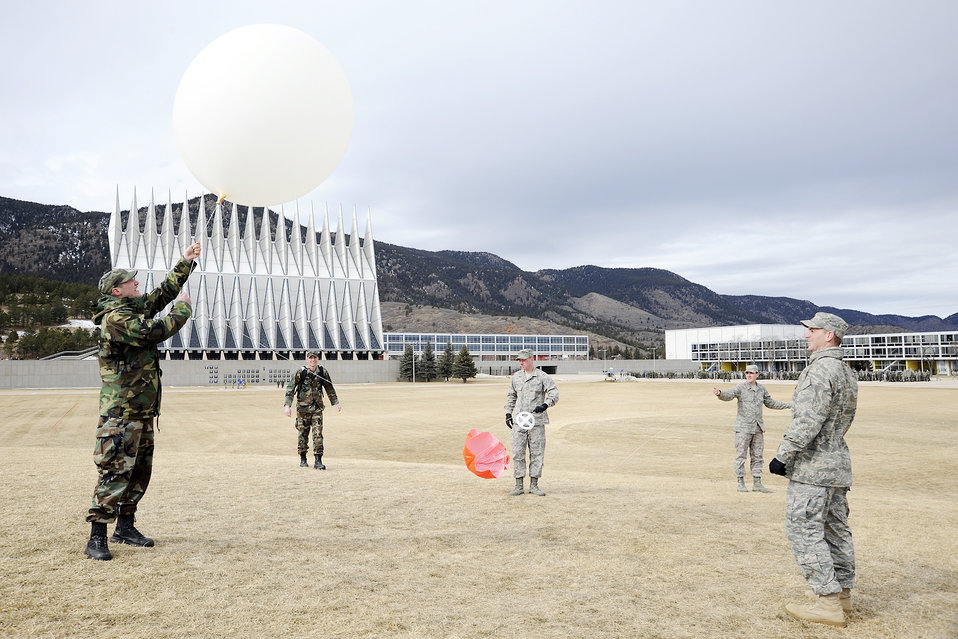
U.S. Air Force Academy, Colo-- Cadet 1st Class John Bowman releases the weather balloon as other meteorology students keep the line attached with the parachute and radiosonde from being entangled during launch as part of the Meteorology 320 course, Introduction to Meteorology and Aviation Weather. This course teaches the fundamentals of meteorology with special emphasis placed on flight weather and its impact on aviation.